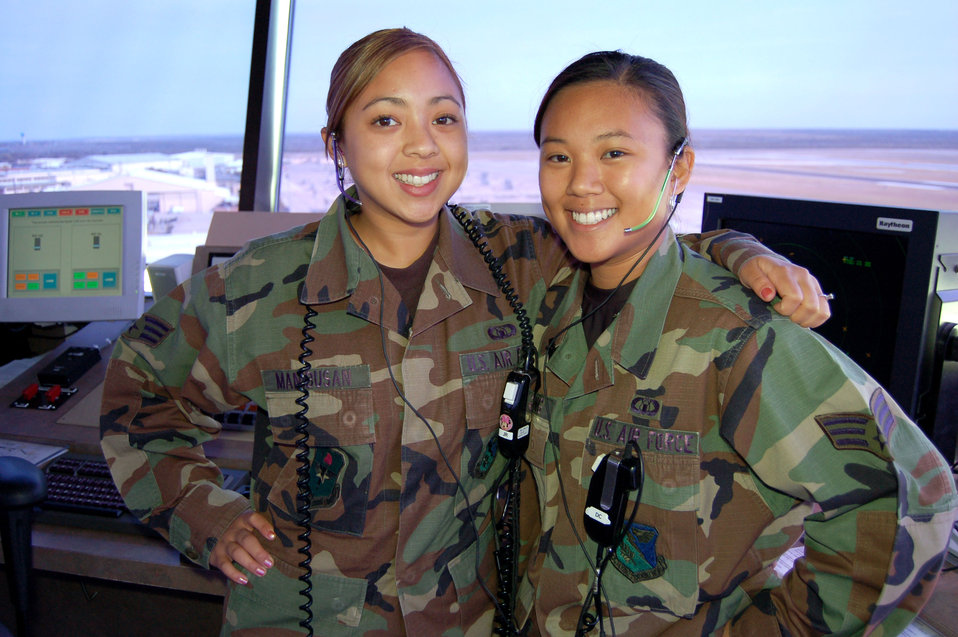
Controller cousins maintaining family tradition

Senior Airman Jennifer Manibusan (left) and her cousin, Senior Airman Catherine Balolong, take a break from their air traffic controller duties at Laughlin Air Force Base, Texas, on Monday, June 26. Airman Manibusan, of Alameda, Calif., and Airman Balolong, of San Leandro, Calif., said serving together since basic training has helped them better adapt to Air Force. The two are with Laughlin's 47th Operations Support Squadron.